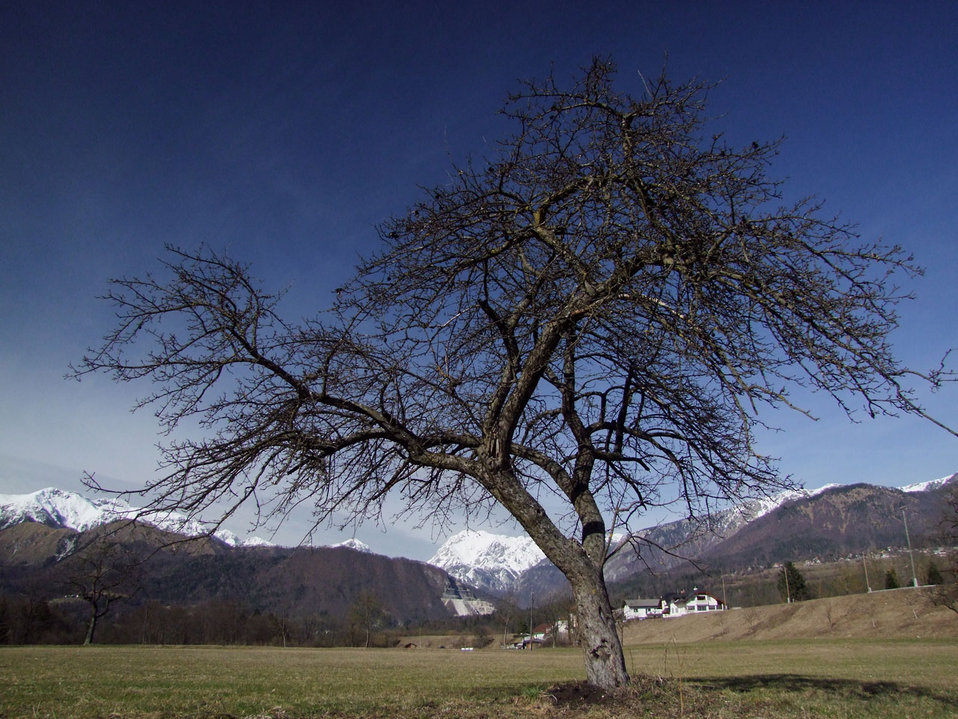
The artist

The apple tree is artistically designing its posture.